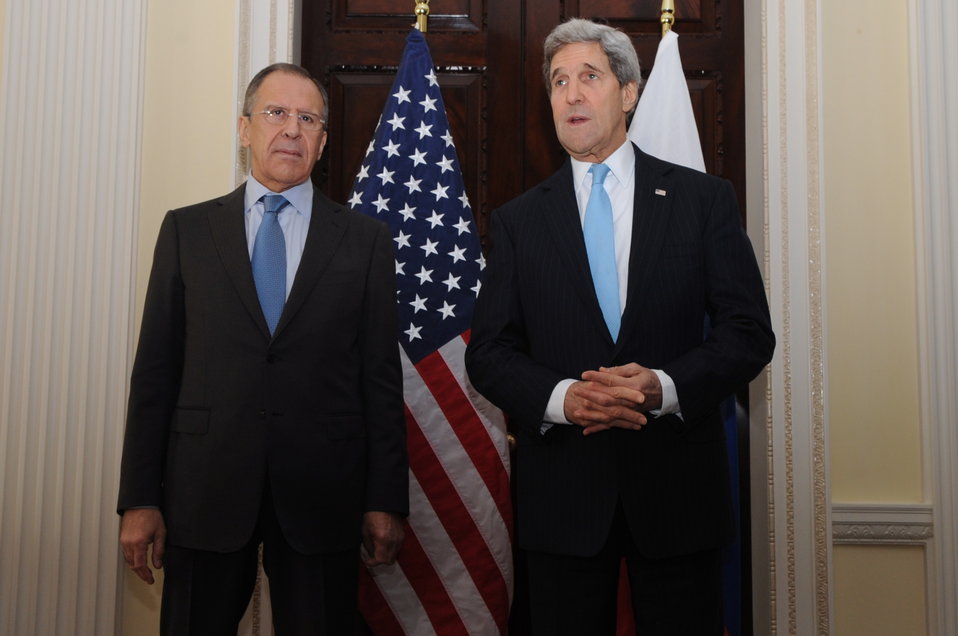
Secretary Kerry Addresses Reporters Before Meeting in London With Russian Foreign Minister Lavrov in London

U.S. Secretary of State John Kerry addresses reporters before a meeting with Russian Foreign Minister Sergey Lavrov at Winfield House, the U.S. Ambassador's Residence in London, United Kingdom, on March 14, 2014. [State Department photo/ Public Domain]anslators, Russian Foreign Minister Sergey Lavrov addresses reporters before a meeting with U.S. Secretary of State John Kerry at Winfield House, the U.S. Ambassador's Residence in London, United Kingdom, on March 14, 2014.